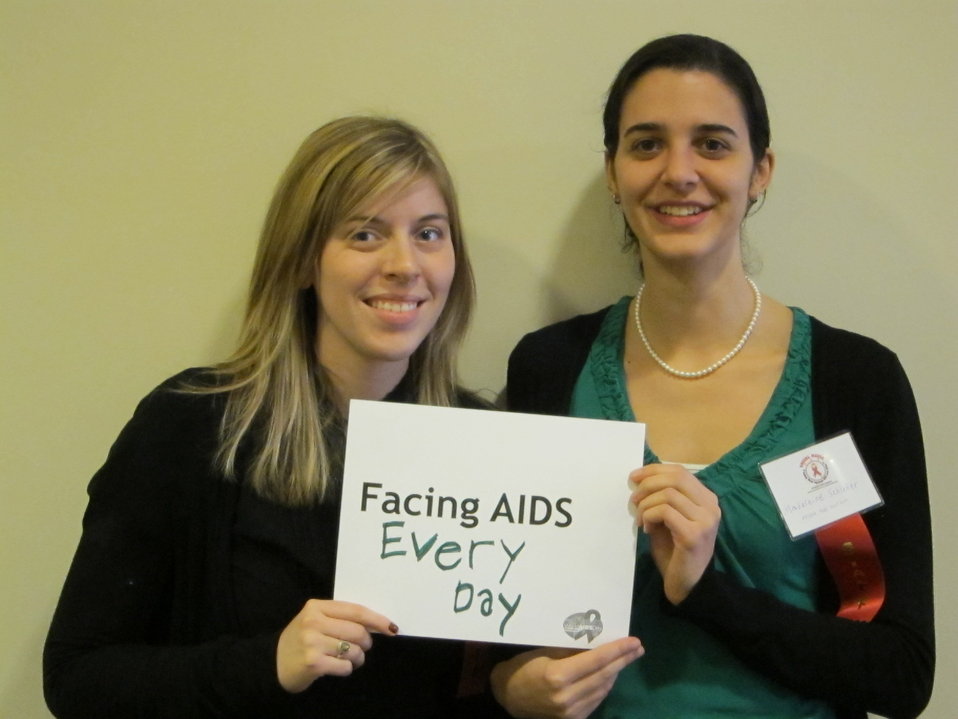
Facing AIDS every day.